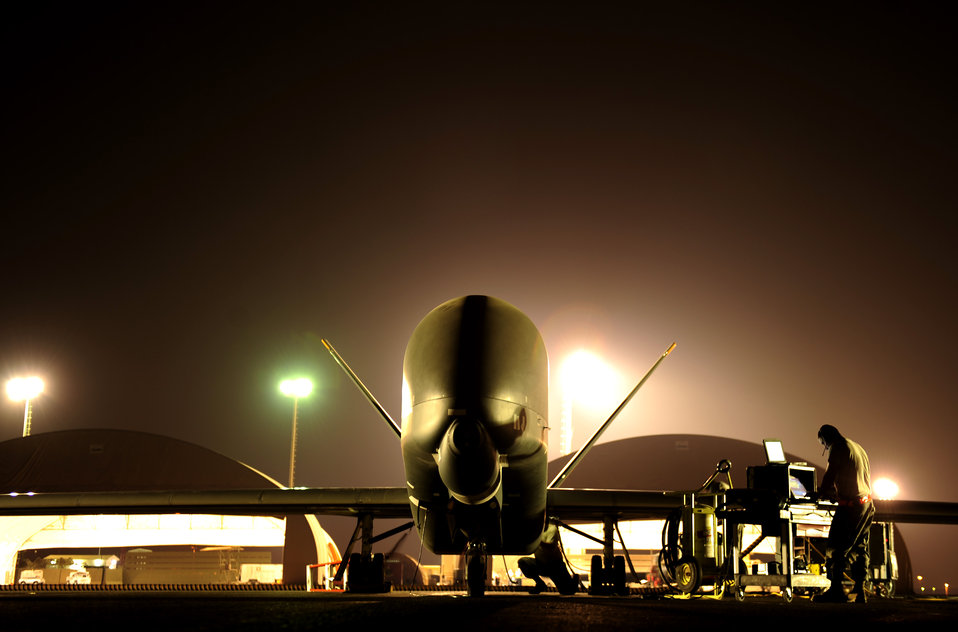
Global Hawk prepares for flying mission

A maintenance technician checks the system as an RQ-4 Global Hawk gets ready for a mission while deployed Nov. 23, 2010, at an air base in Southwest Asia. The RQ-4 and Airmen are assigned to the Expeditionary Operations Group.